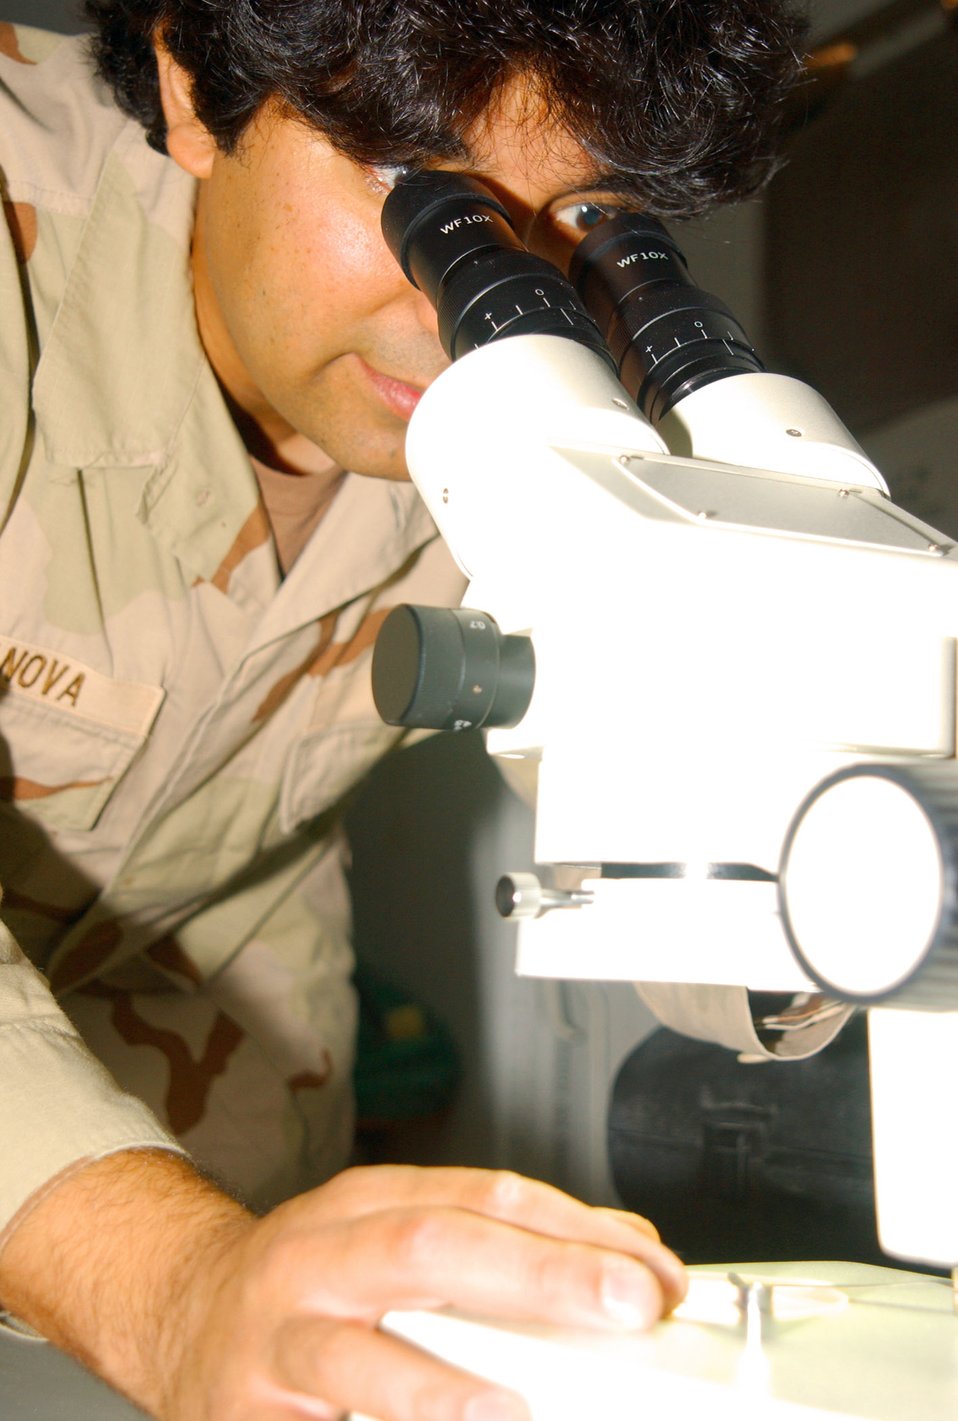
Area Lab samples fuel, oxygen for entire AOR

SOUTHWEST ASIA (AFPN) -- Mike Casanova examines particles caught in a fuel filter. The aerospace fuels laboratory's area lab here analyses all fuels and gases throughout Southwest Asia. The lab also provides an analysis when mishaps or possible contaminations occurs. Mr. Casanova is the lab's chief.